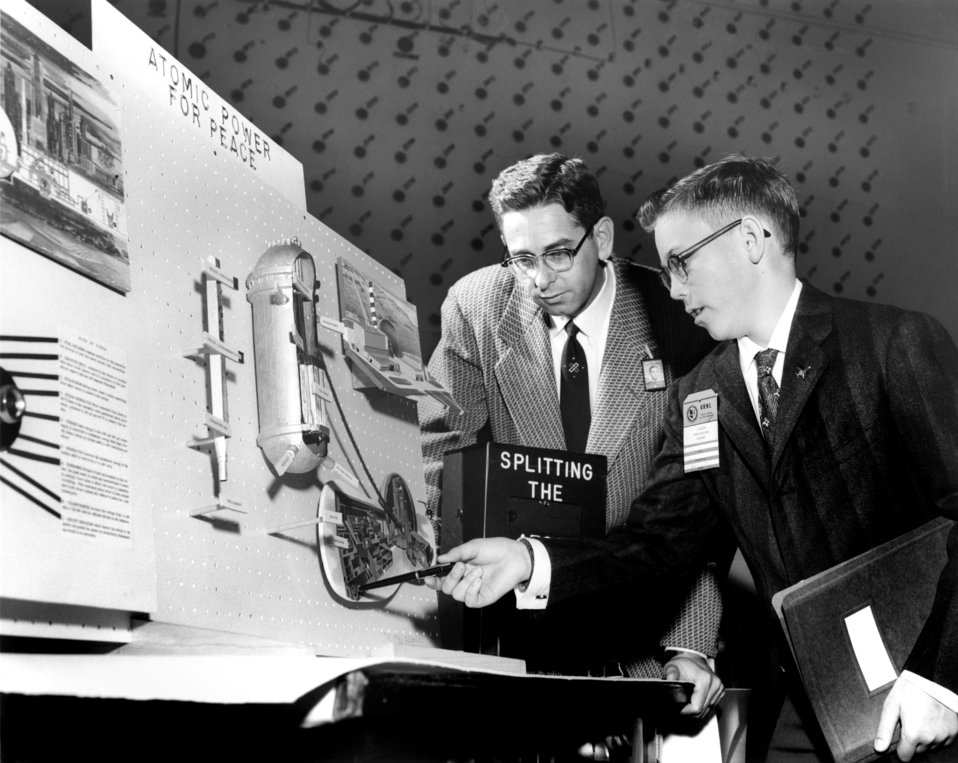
Grapite Reactor Exhibit 1958 Oak Ridge National Lab

58-226 DOE photo Ed Westcott 3-21-1958 Grapite Reactor Neighbors Exhibit at reactor loading face Oak Ridge Tennessee